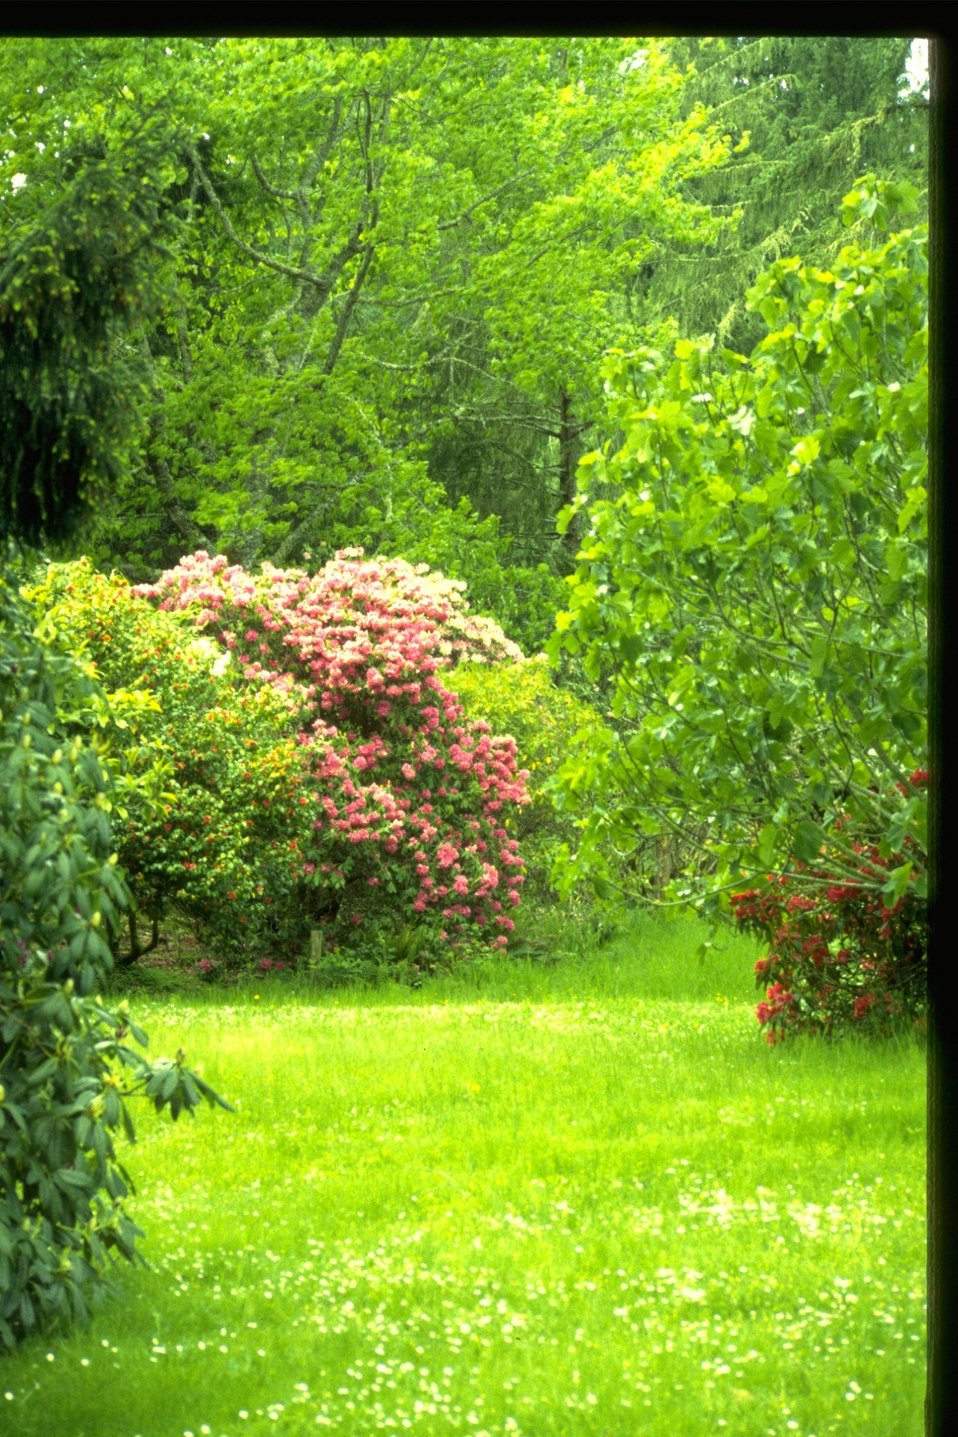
Meadow at Spruce Reach Island.